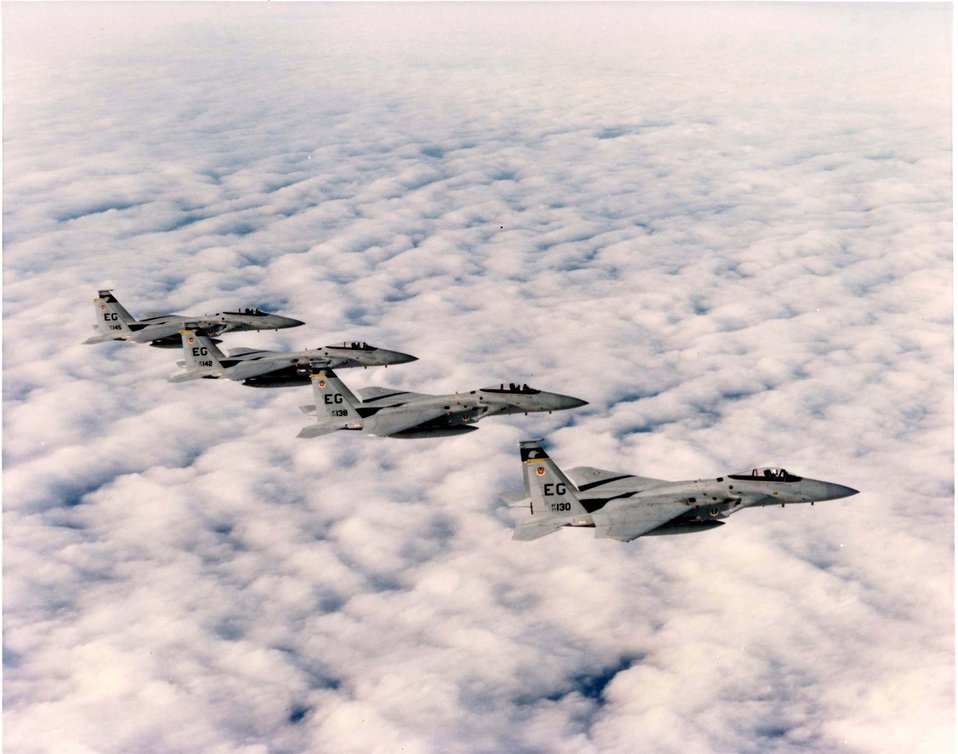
F-15A Eagle four-ship formation

A four-ship formation of F-15A Eagles from Eglin Air Force Base, Fla., fly a routine training mission.